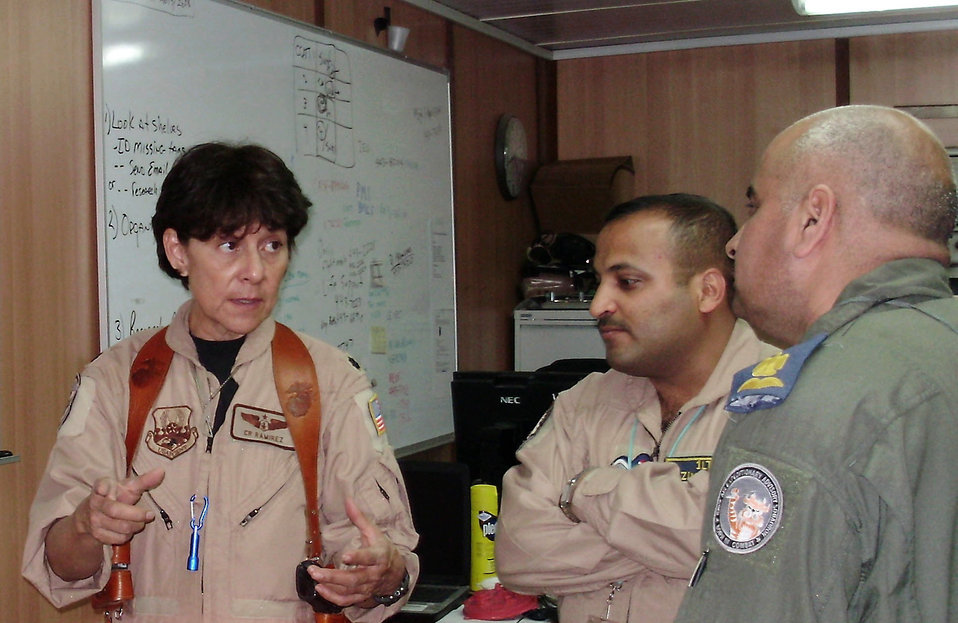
Iraqi surgeons attend annual conference in Germany

Lt. Col. C. R. Ramirez explains tracking the functioning status of aeromedical evacuation equipment to Iraqi air force flight surgeons Major (Dr.) Abdulrazzaq and Lt. (Dr.) Hazem March 11 at Joint Base Balad, Iraq. Colonel Ramirez is assigned to the 332th Expeditionary Operation Support Squadron deployed from Travis Air Force Base, Calif.